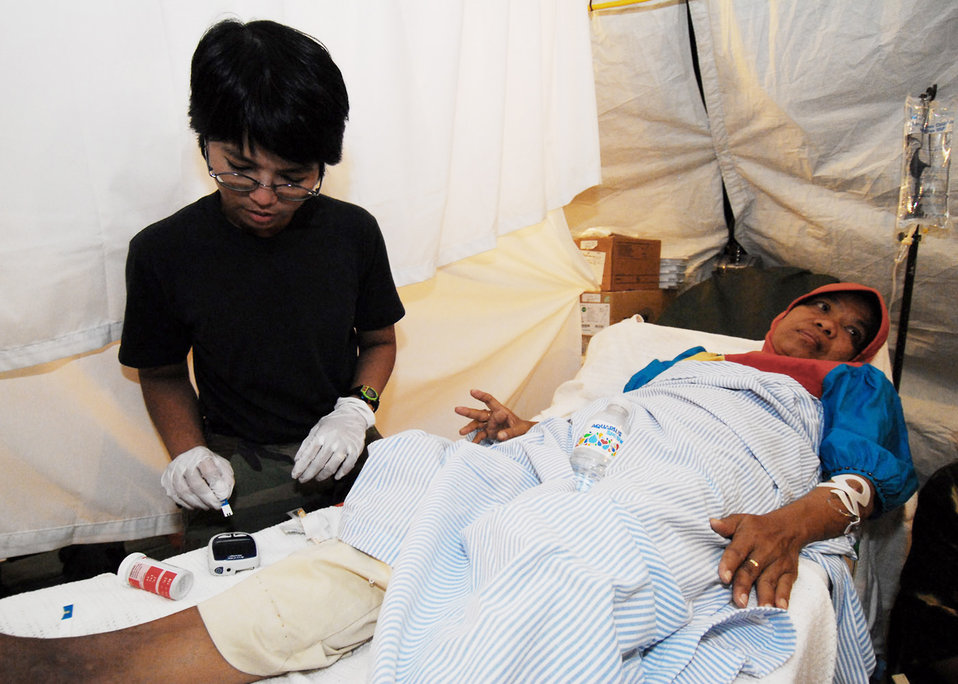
HARRT arrives in Indonesia

Maj. Ma Adelver Martin checks a patients' glucose levels Oct. 7, 2009, in Padang, Indonesia. The Air Force humanitarian assistance rapid response team has set up a mobile field hospital to provide medical care to those injured by the recent earthquakes in Indonesia. Major Martin is a HARRT member from Yokota Air Base, Japan, and is a critical care nurse with the 374th Aeromedical Squadron at Yokota.